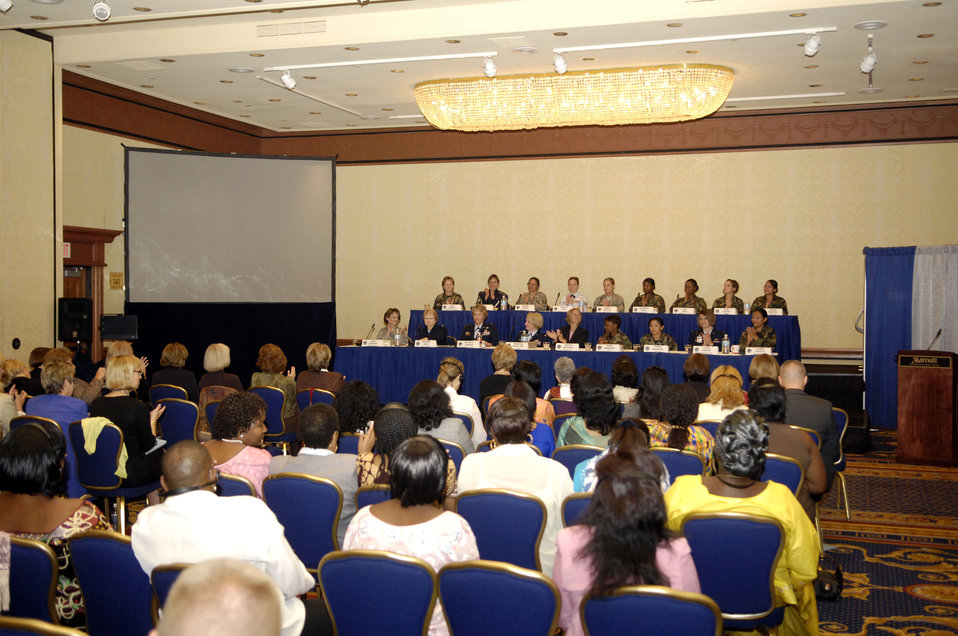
Air chiefs spouses forum

Female Airmen from the ranks of airman basic to lieutenant general field questions from air chiefs' spouses from throughout the world during a forum at the Global Air Chiefs Conference in Washington, D.C., Sept. 26. The Airmen, from various career fields including personnel, judge advocate general, services, pilot and aircraft maintenance, answered questions regarding deployments and balancing families and careers. Topics of particular interest to the foreign spouses included the reputation of the Air Force's quality of life programs.